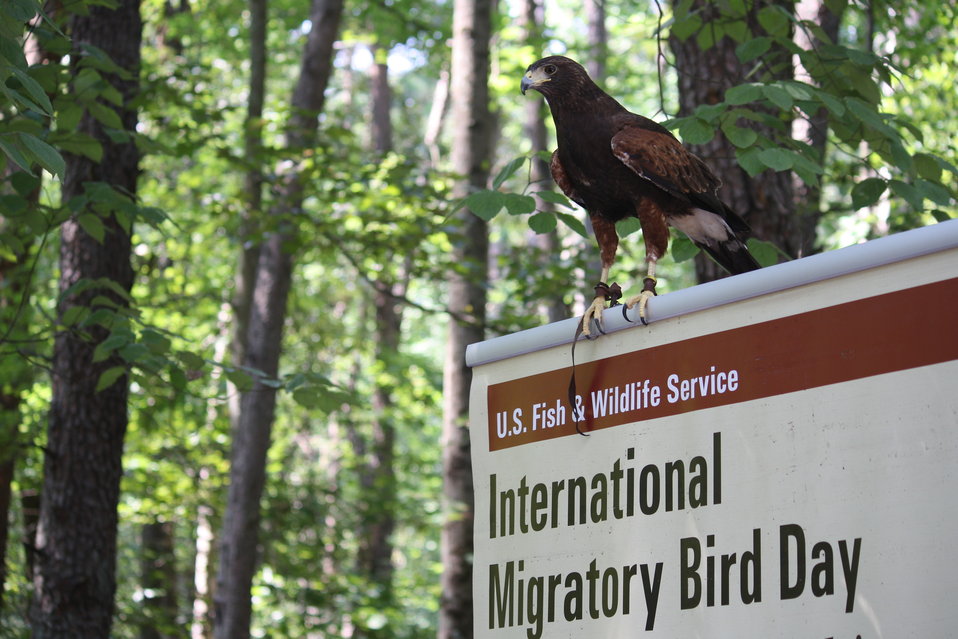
Boy Scout Jamboree 2010

Credit: Chris Poulin/ USFWS

Trained harris's hawk on the Conservation Trail.